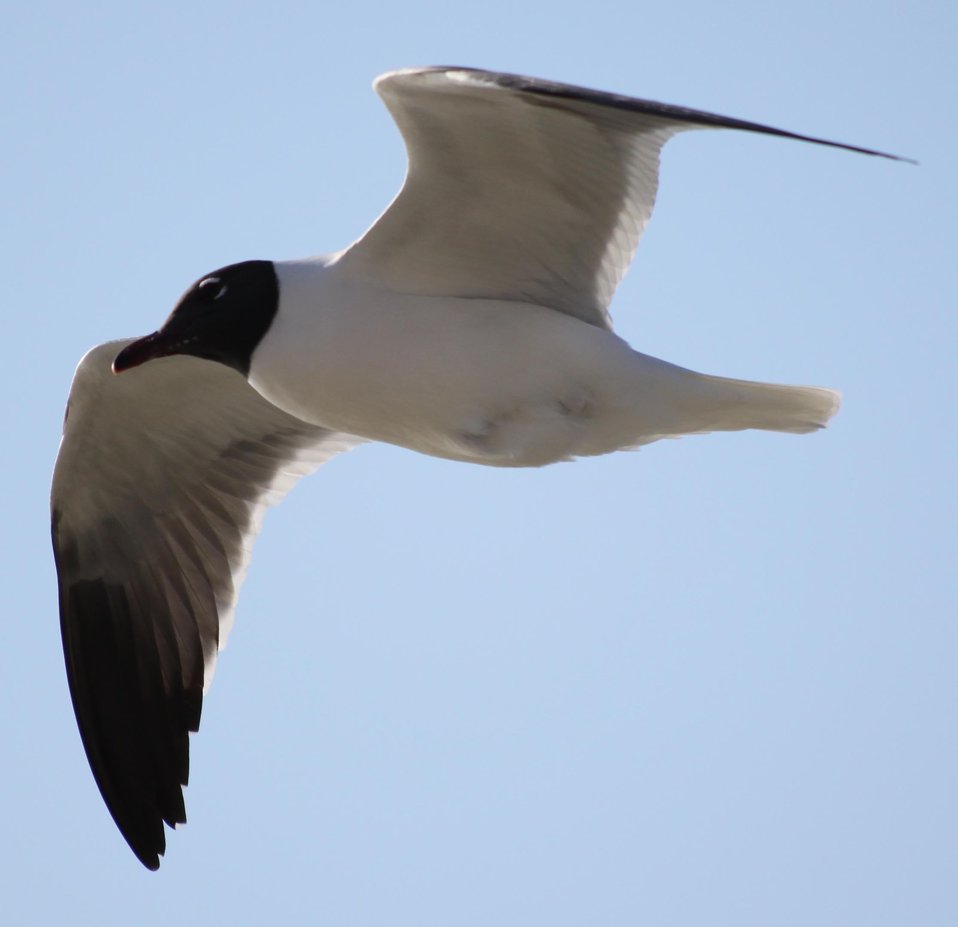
Laughing gull in flight